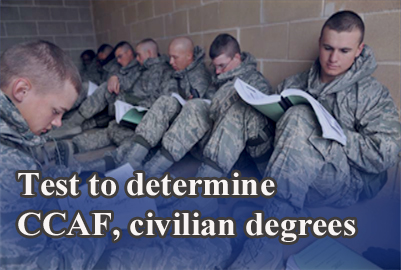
LacklandTraining

12/16/08 12:07:29 -- San Antonio, TX U.S.A
-- Air Force Security Forces Training --
A1C Tyler Hollis, 18, from New Plymouth, Idaho, and AB Michale Wonnell, right, 19, from San Jose, Ca., both study while he waiting thier turn as Members of the 343rd Training Squadron undergo domestic disturbance training at Lackland Air Force Base, San Antonio, Tx, 12/16/08.